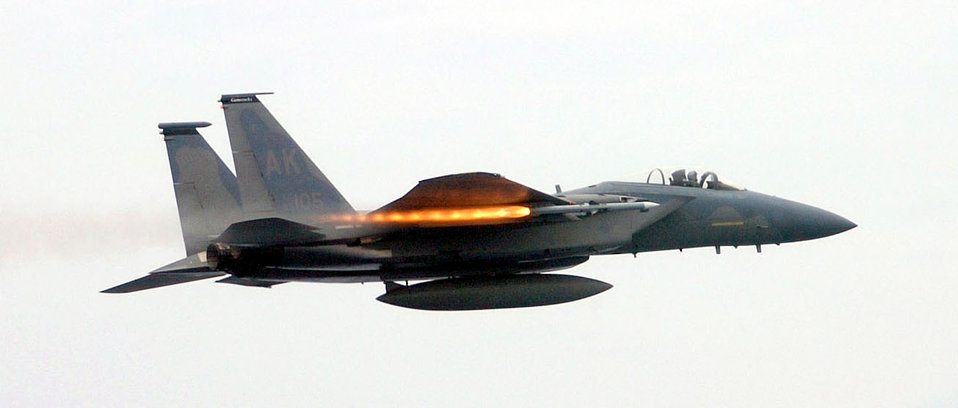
Launch

TYNDALL AIR FORCE BASE, Fla. -- Capt. Scott Stadelman, an F-15C Eagle pilot assigned to the 19th Fighter Squadron, Elmendorf AFB, Alaska, fires an AIM-120C Advanced Medium Range Air-to-Air Missile. Stadelman deployed here to participate in an Air-to-Air Weapons System Evaluation Program mission called Combat Archer.